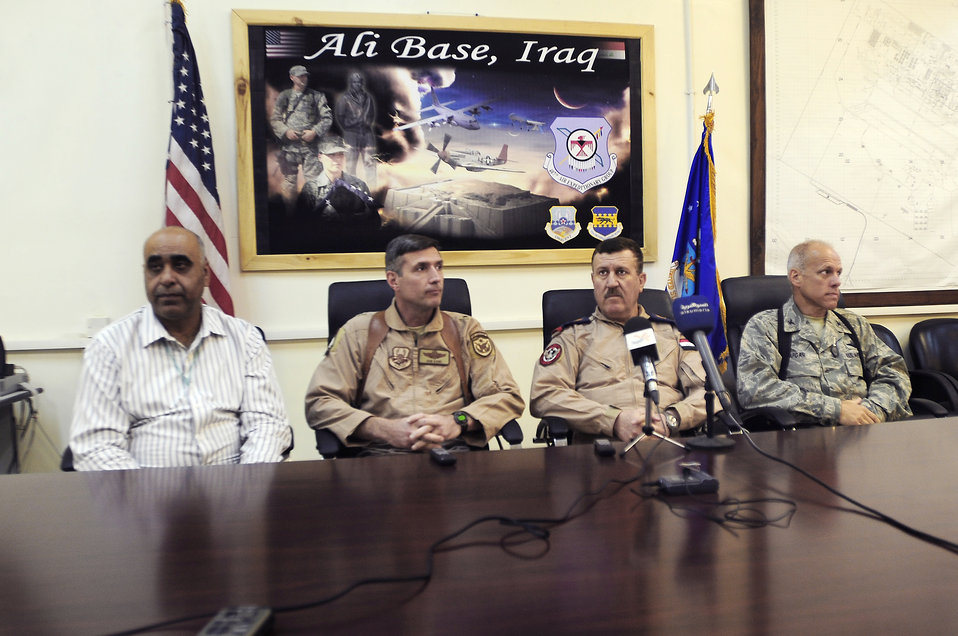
Iraqi, U.S. Air Force work hand in hand to support drawdown of forces

An Iraqi interpreter (left to right), Maj. Gen. Robert Kane, Iraqi air force Commander Staff Lt. Gen. Anwar Hamad Amen Ahmed and Col. Glen Apgar conduct a question and answer session with Iraqi media Sept. 24, 2009, at Ali Base, Iraq. General Kane is the director, Iraq Training and Advisory Mission - Air Force, and Colonel Apgar is the 407th Air Expeditionary Group commander.